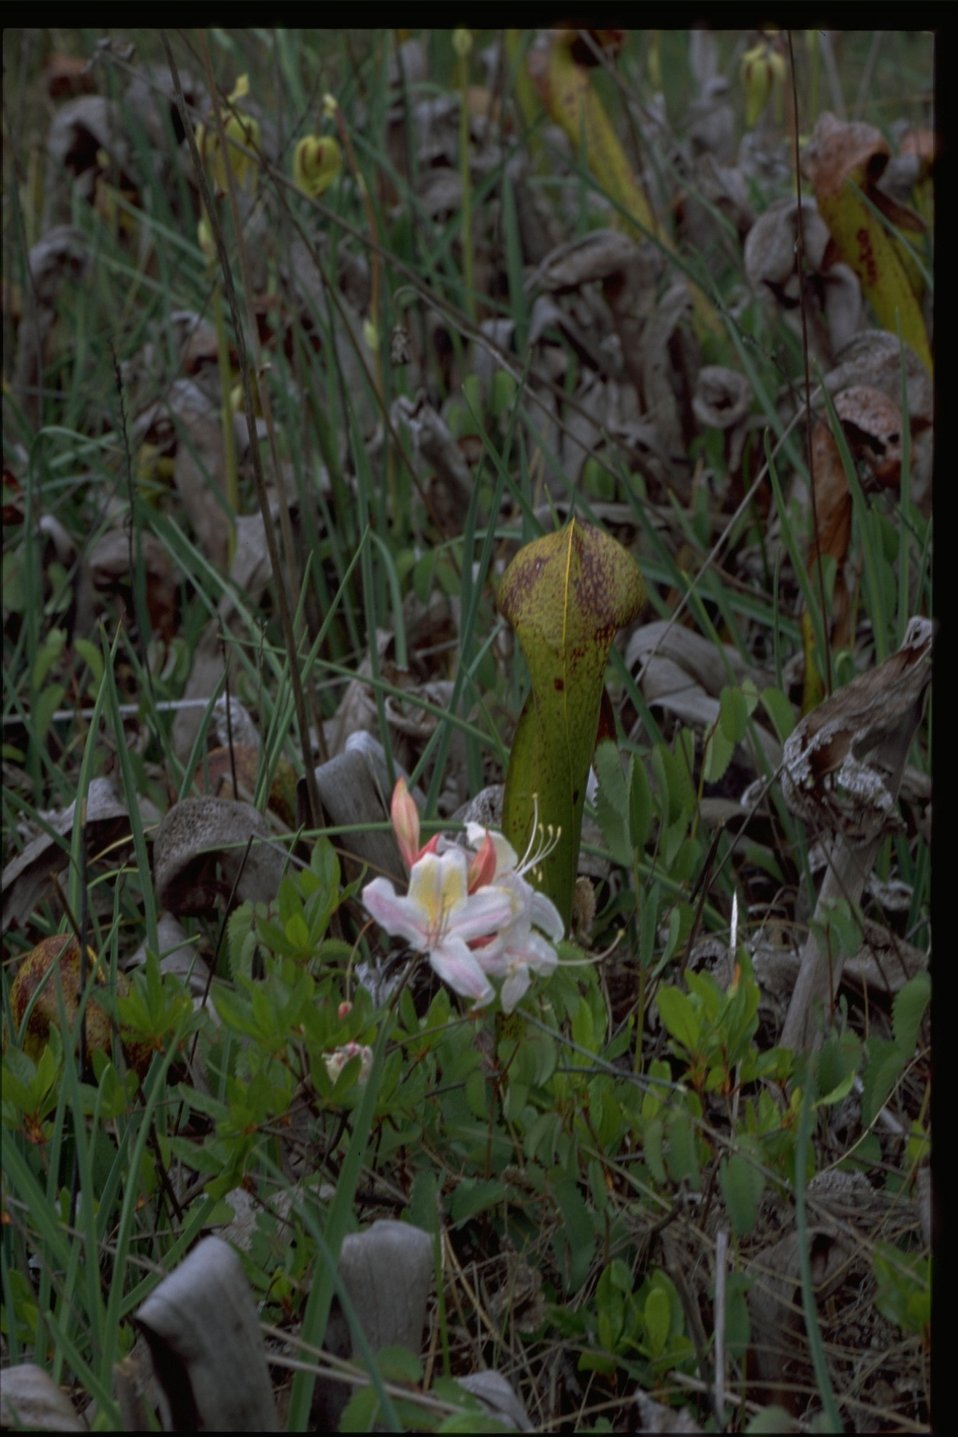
Medium shot of Darlingonia californica (Cobra Lily) and Rhododendron occidentale.